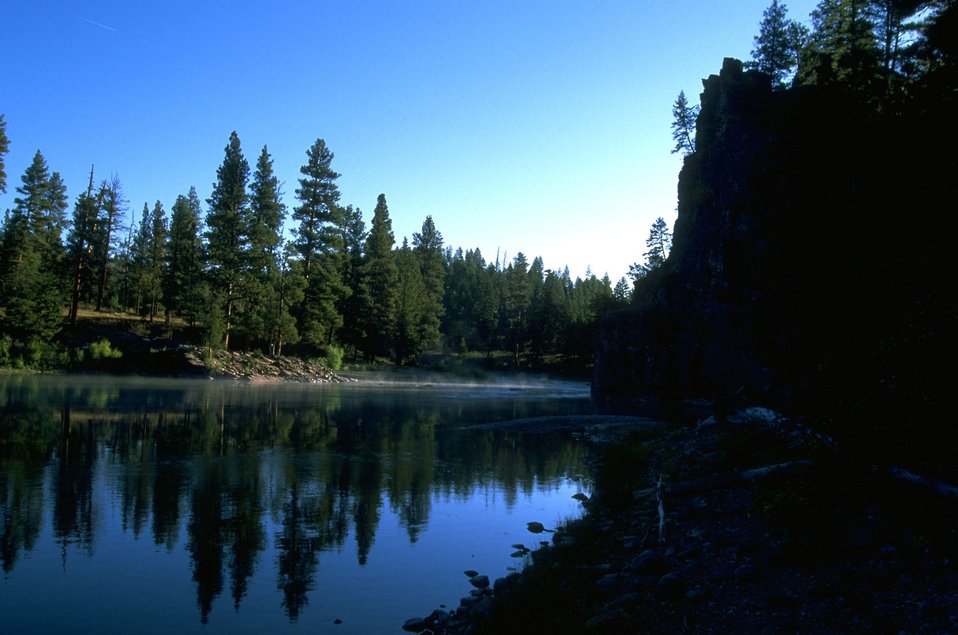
Red Rocks day-use area of Blackfoot River in the early morning